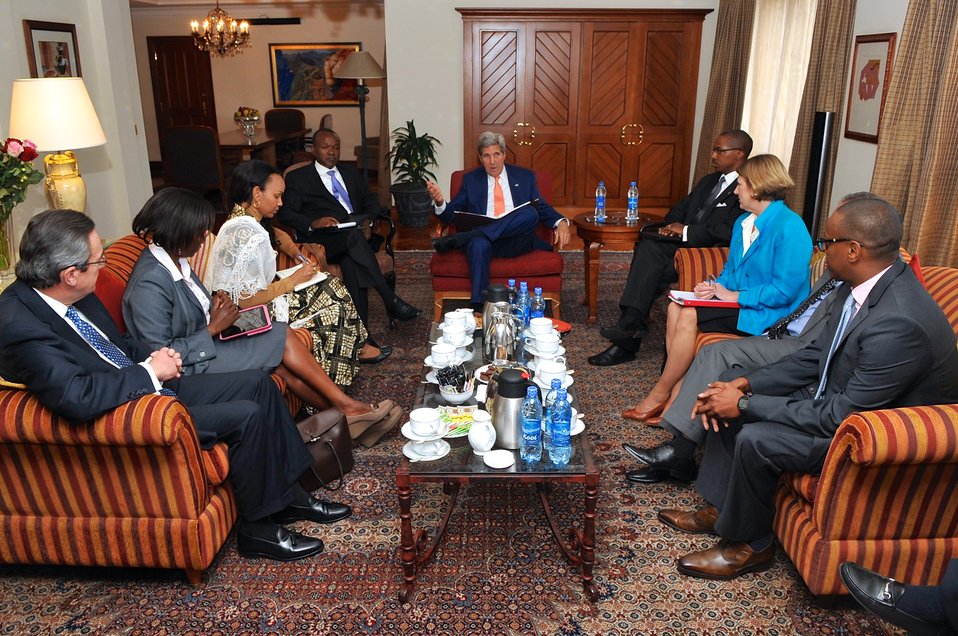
Secretary Kerry Meets With Group of Business Leaders in Ethiopia

U.S. Secretary of State John Kerry meet with a group of business leaders on May 1, 2014, following a round of government meetings in Addis Ababa, Ethiopia, at the outset of the six-day trip through Africa.